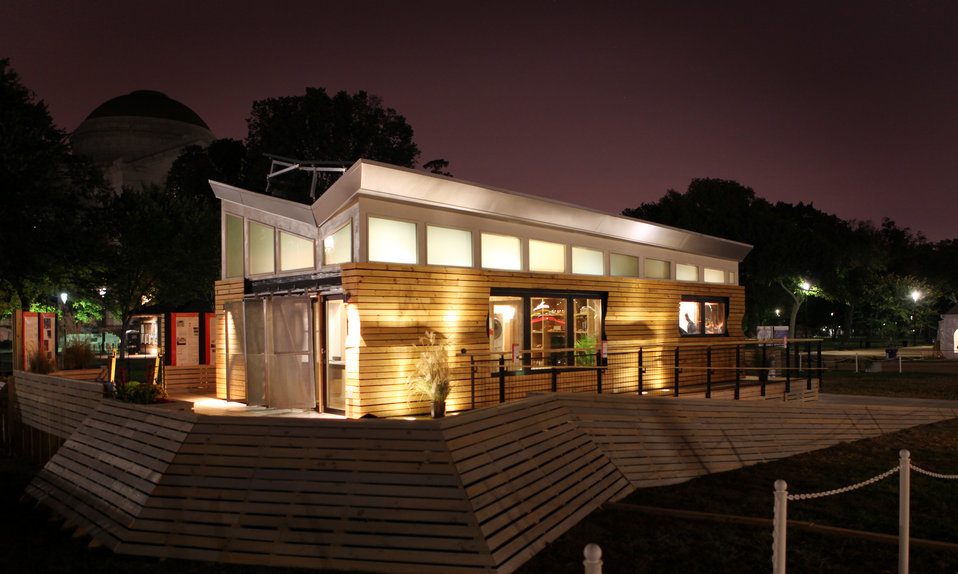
LED lights strategically placed in the base of the house and deck to help the University of Wisconsin-Milwaukee's solar-powered house illuminated at night during the lighting design contest at the solar decathlon.

The U.S. Department of Energy Solar Decathlon, features energy-efficient, solar-powered houses built by 20 university teams from North American and Europe. The National Solar Decathlon The National Mall in Washington, DC, October 12, 2009.